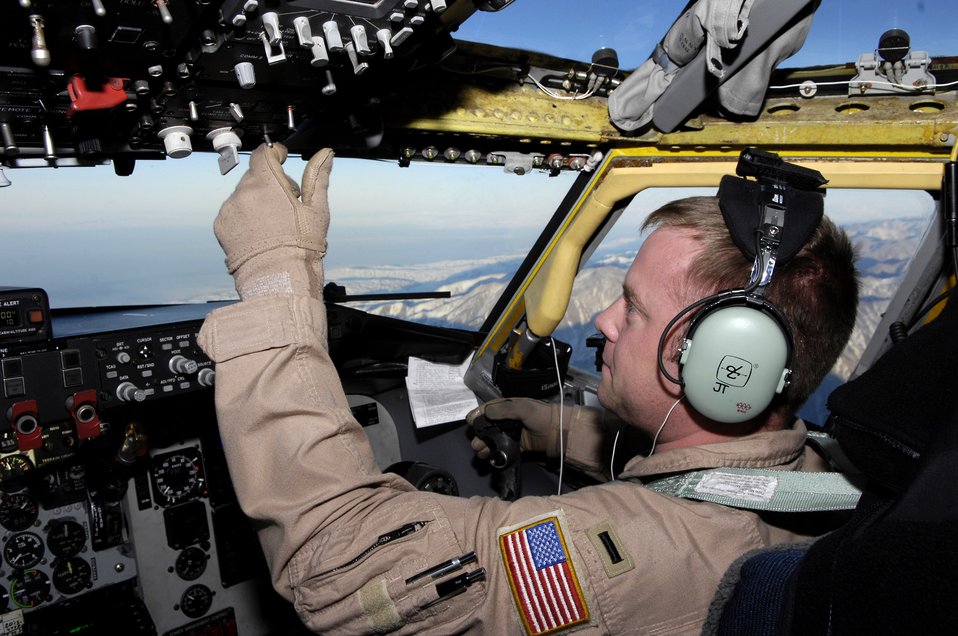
Heading home after a long day

1st Lt. Justin Tiffany checks his settings as this KC-135 Stratotanker flies over the mountains of Afghanistan Jan. 1 after a refueling mission. The tanker was returning to Manas Air Base, Kyrgyzstan.